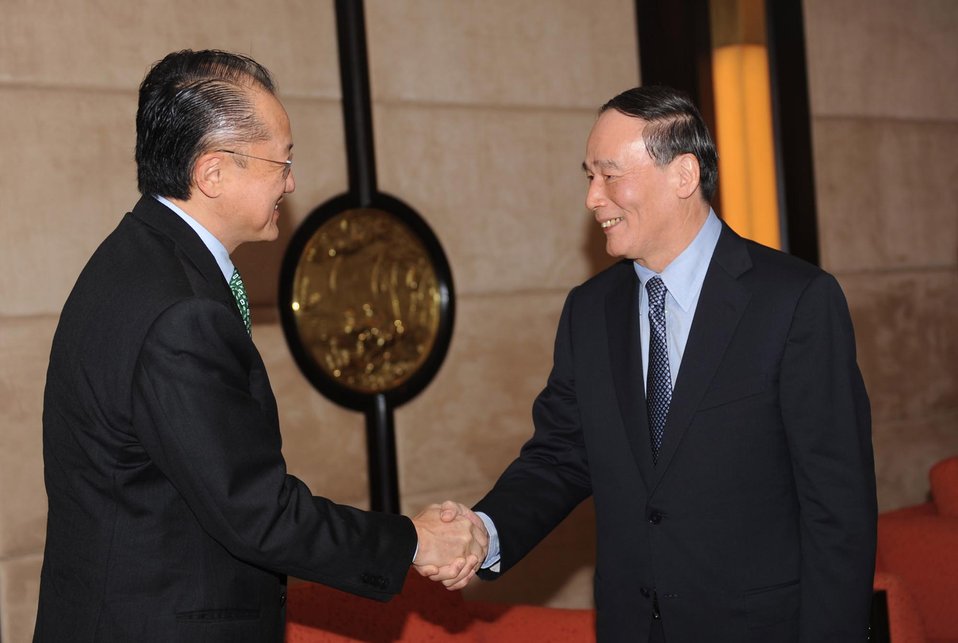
Dr. Jim Yong Kim meeting with Chinese Vice Premier Wang Qishan

Dr. Jim Yong Kim, U.S. Nominee for the World Bank Presidency, met on March 31, 2012 with Chinese Vice Premier Wang Qishan in Shaoxing, China. Dr. Kim and Vice Premier Wang discussed how the World Bank can promote the rapid development and poverty alleviation achieved by China and South Korea throughout the developing world. Dr. Kim also reiterated his belief in the importance of a strong voice for emerging economies in the World Bank. China is the second stop on Dr. Kim's global listening tour, as he solicits priorities and ideas for the future of the World Bank from around the world.